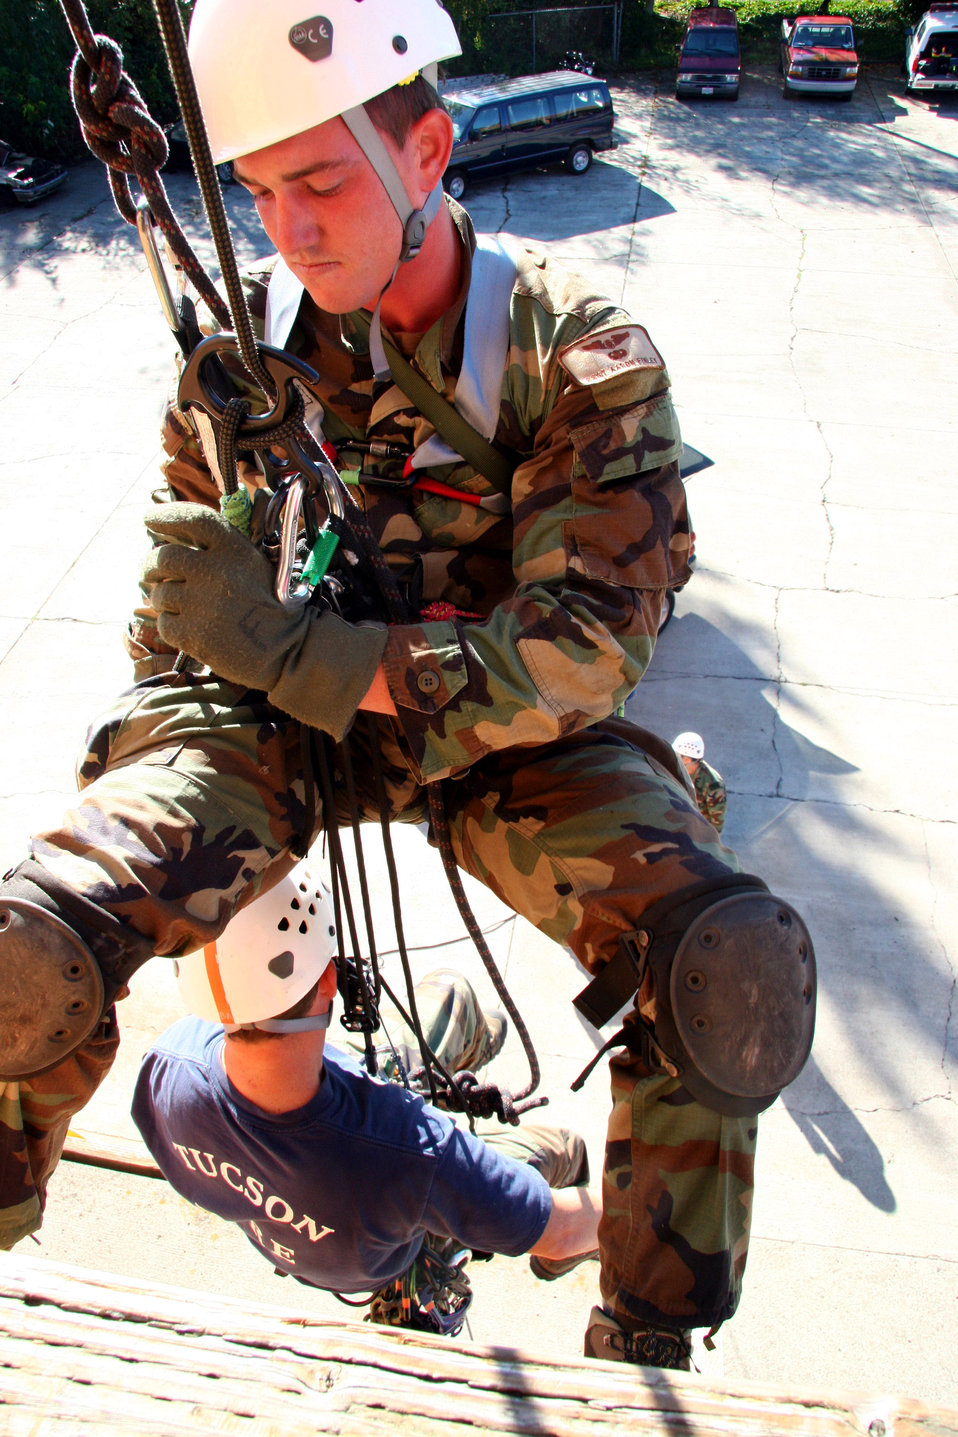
Rescuers learn to make order out of chaos

Staff Sgt. Aaron Finley transfers the load of his